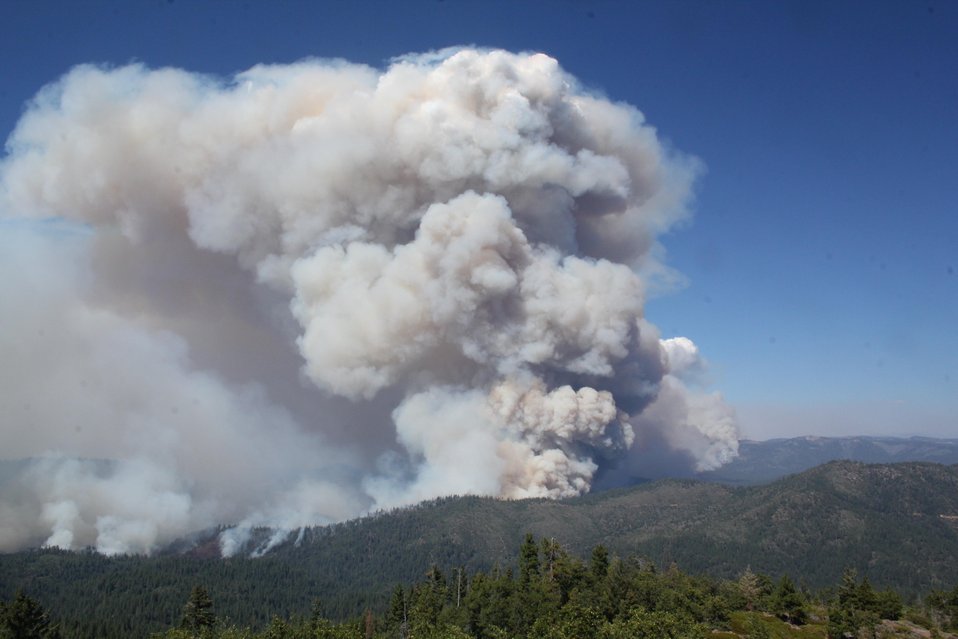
The Rim Fire in the Stanislaus National Forest near in California began on Aug. 17, 2013 and is under investigation. The fire has consumed approximately 192,737 acres and is 30% contained.